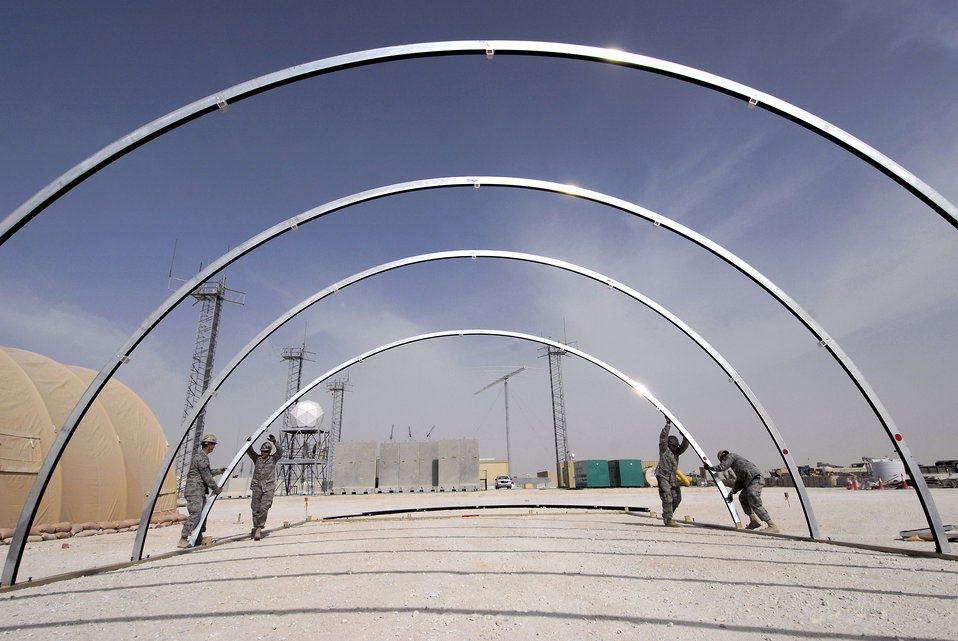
Raising the roof

Structures team members from the 379th Expeditionary Civil Engineer Squadron set the arches Feb. 17 for a California Medium Shelter System to house Airmen at an air base in Southwest Asia.